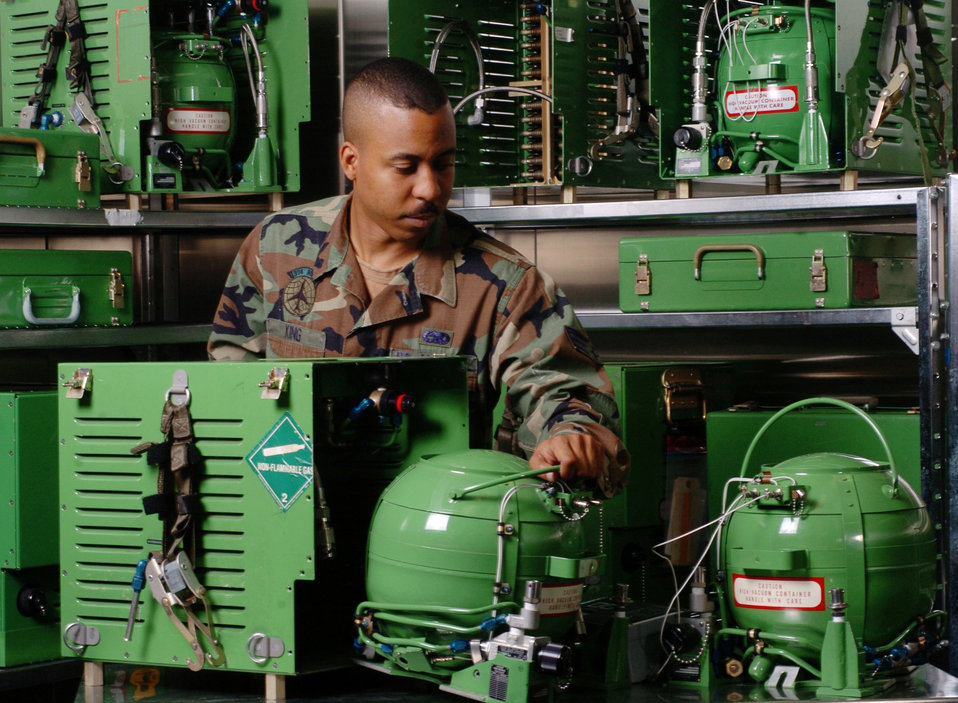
Inspecting 'LOX' of converters

YOKOTA AIR BASE, Japan -- Senior Airman Garry King ensures liquid oxygen converters are in proper condition during an annual inspection here. The converter assembly is designed to store and convert liquid oxygen into gaseous oxygen for aircrews during flight. During inspection, Airman King checks for cracks, air leaks, corrosions and chipped paints. He also ensures batteries and gauges are in top shape. He is an electrical/environmental technician with the 374th Maintenance Squadron.